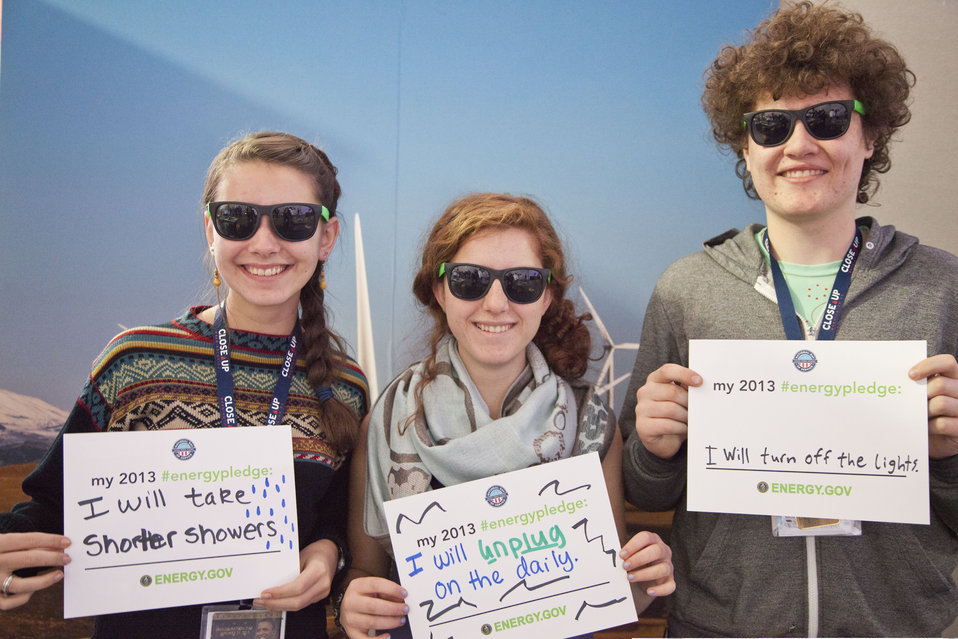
What's your #energypledge?